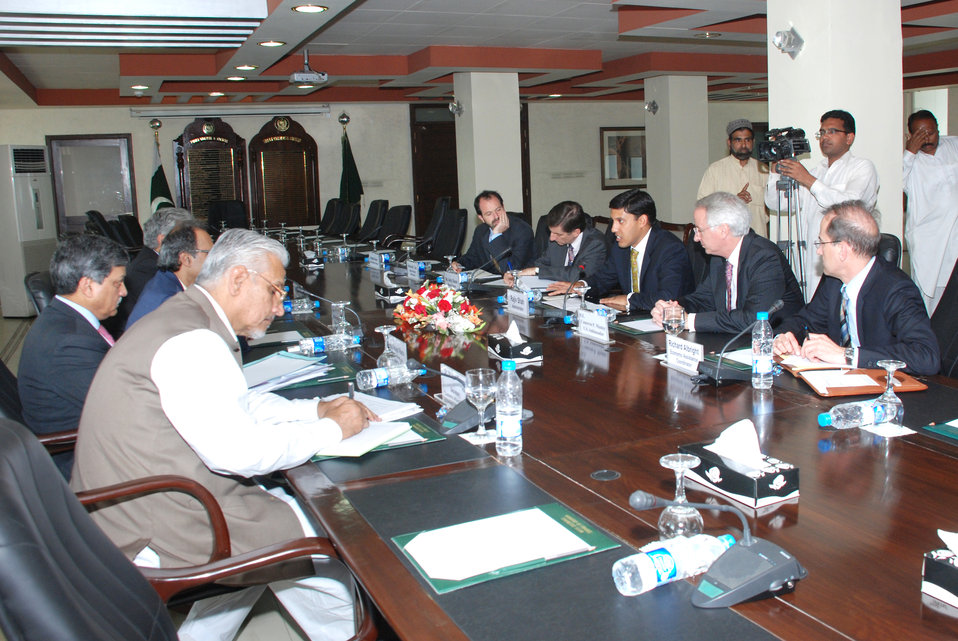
USAID and Pakistan Working Together to Promote Growth, Prosperity at Islamabad on April 13, 2012

Dr. Rajiv Shah (USAID) met with Finance Minister Hafeez Shaikh at the Ministry of Finance. The two discussed the important role economic assistance brings to the bilateral relationship, and how U.S. civilian assistance can create jobs and raise incomes for more Pakistanis.